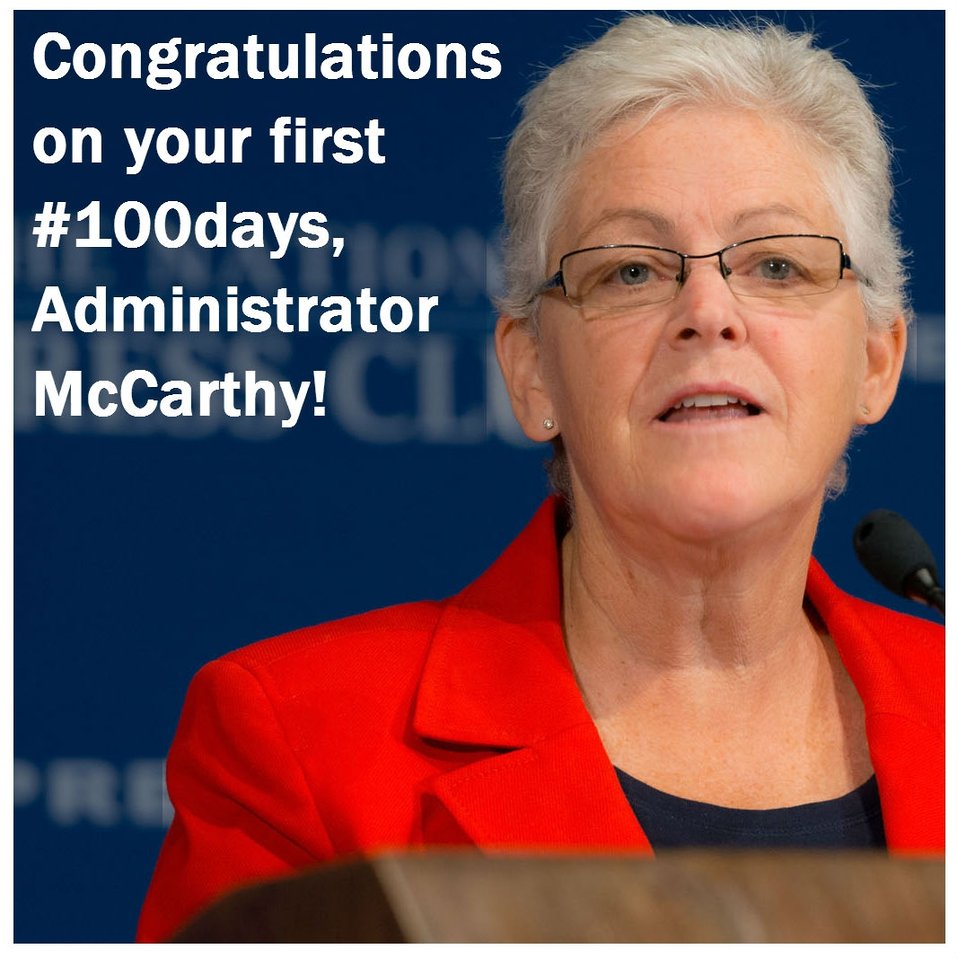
Administrator Gina McCarthy's First 100 Days

Share this and tell us what EPA has done to make your community healthier and safer.